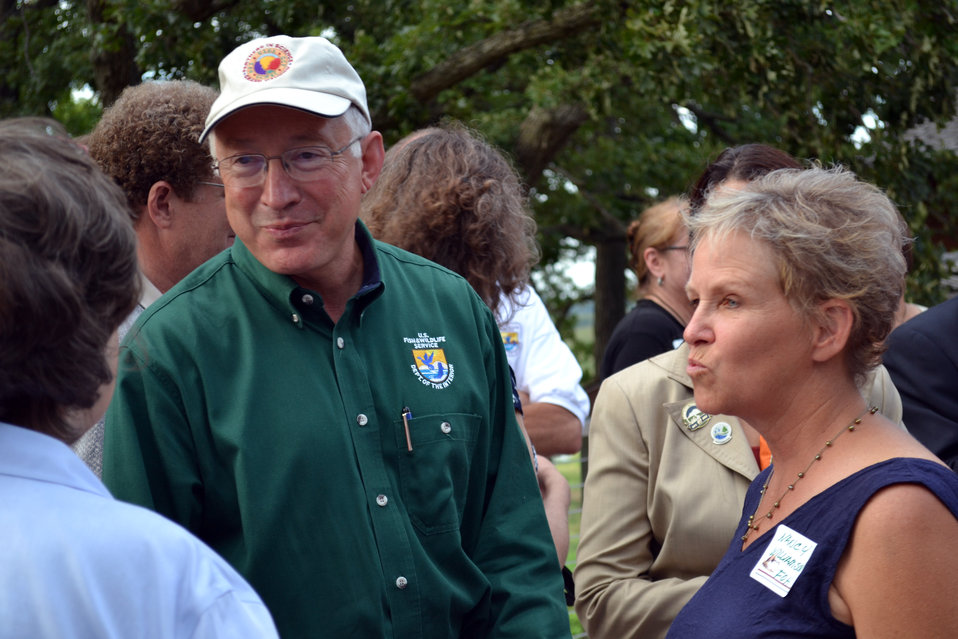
Meeting with Friends of Hackmatack

Secretary of the Interior Ken Salazar met with members of the Friends of Hackmatack and thanked them for their vision and support.